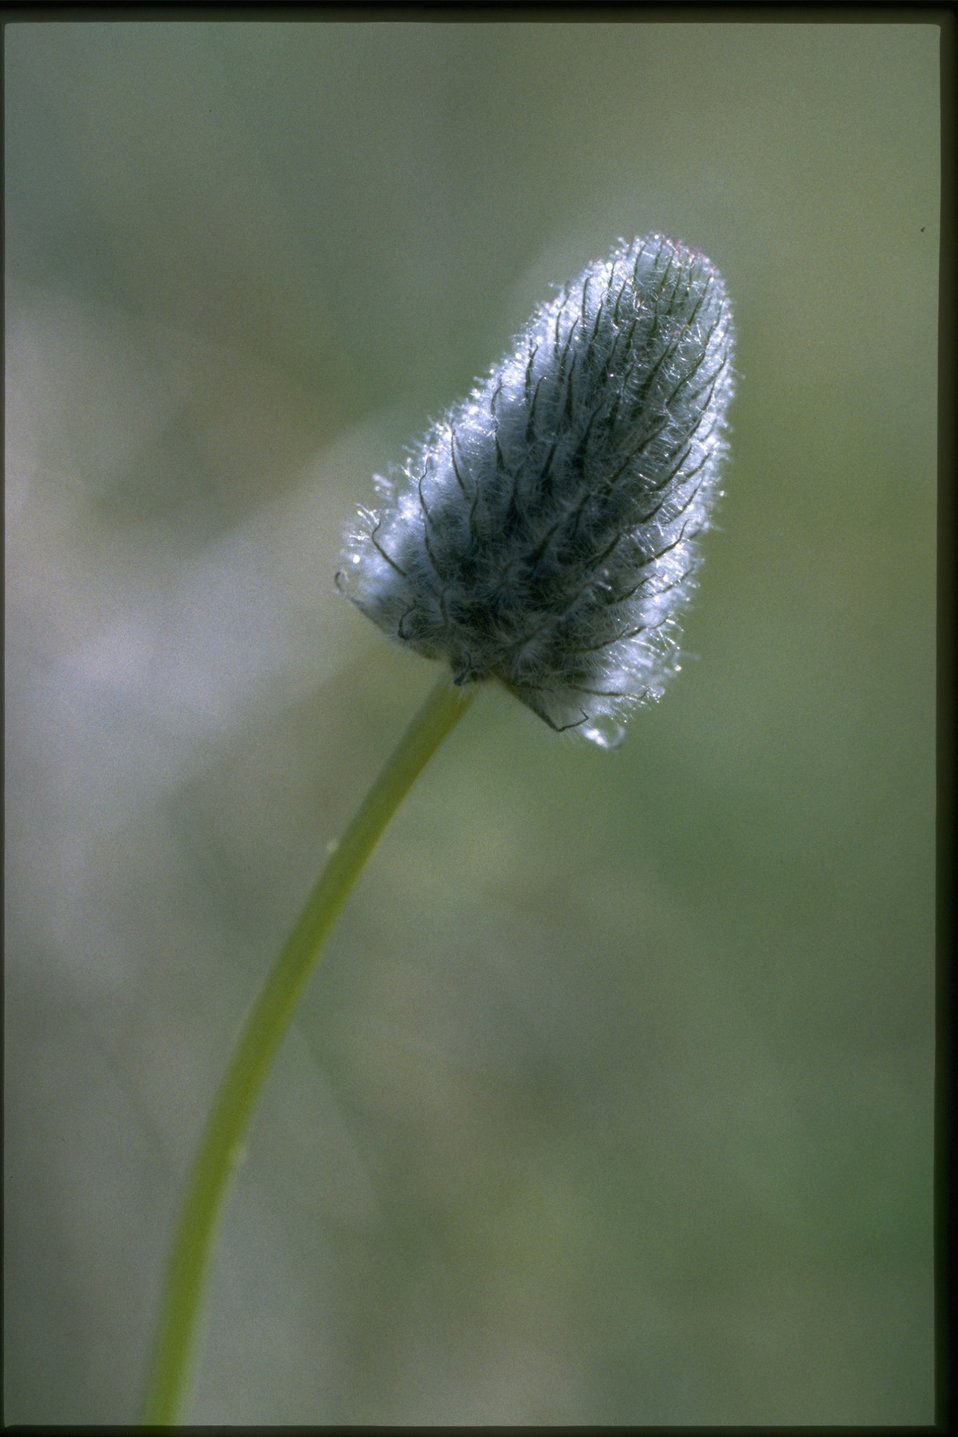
Closeup shot of Trifolium.